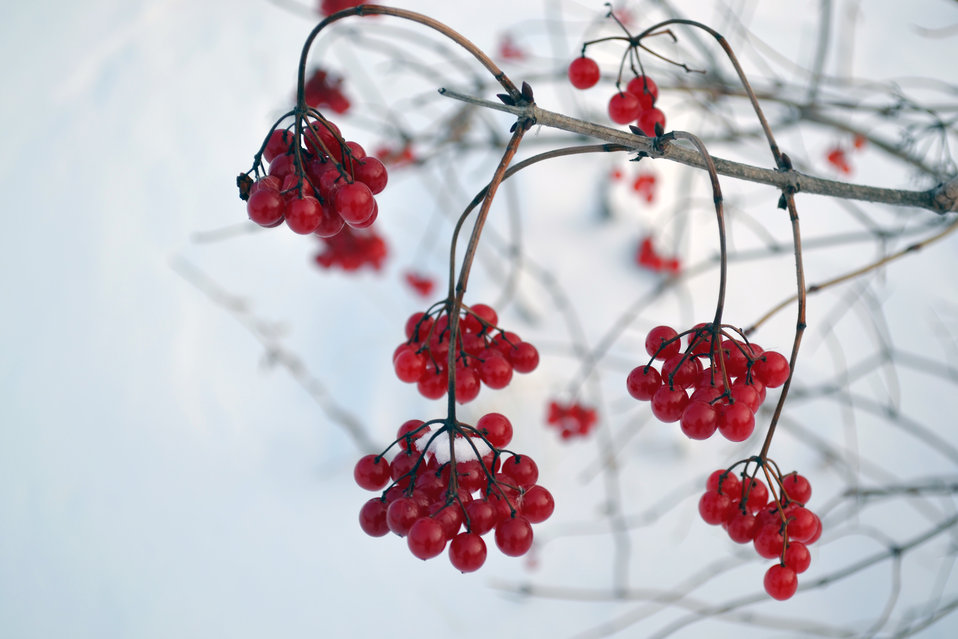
High-bush Cranberry

A winter favorite among cedar waxwings, robins, and ruffed grouse, these tangy berries are in the honeysuckle family rather than their common name implies.